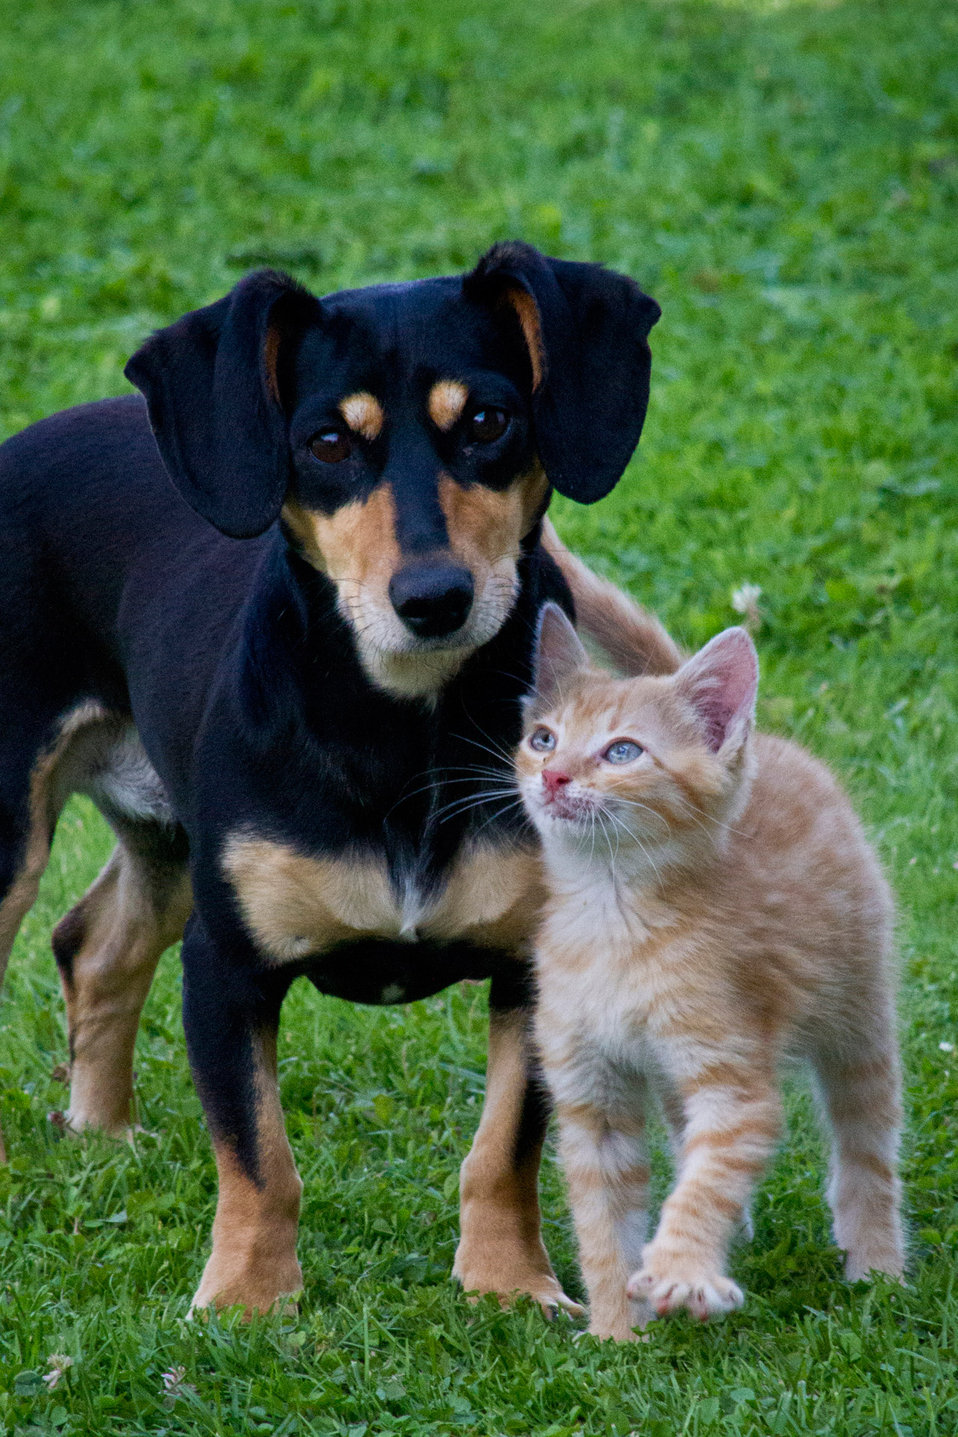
Cat and dog.